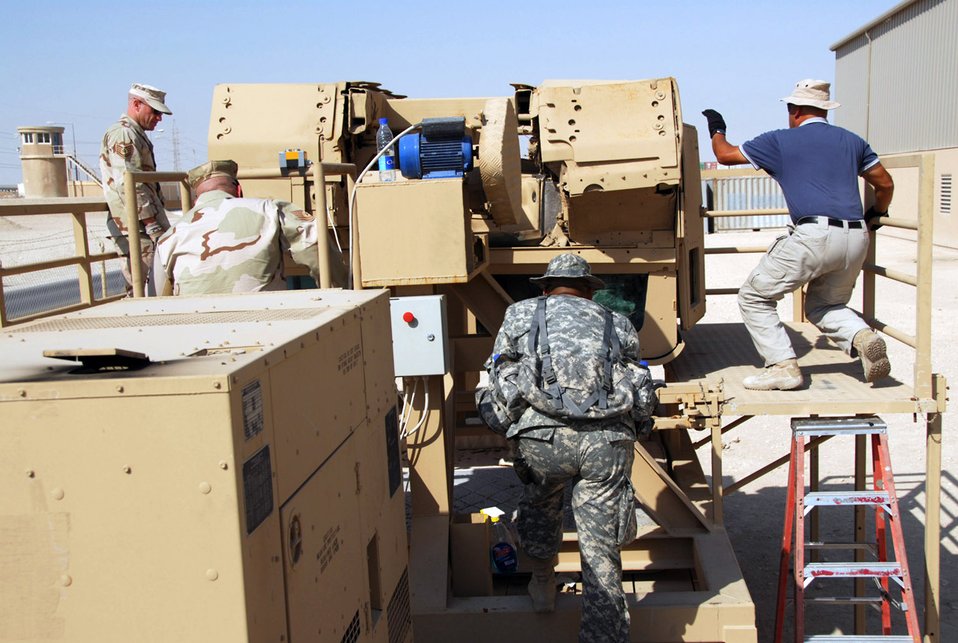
Airmen receive Humvee egress training to improve survival

Airmen in the 379th Expeditionary Security Forces Squadron are getting specialized training at an Army camp in Southwest Asia to learn how to escape an inverted Humvee and increase their chance of survival after a catastrophic event. Using a rollover Humvee simulator, Tech Sgt. Noah Coon (from left), Tech Sgt. Thomas Williamson, Staff Sgt. Jose Chun and Staff Sgt. Kyle Torres stand by to assist trainees inside the simulator.